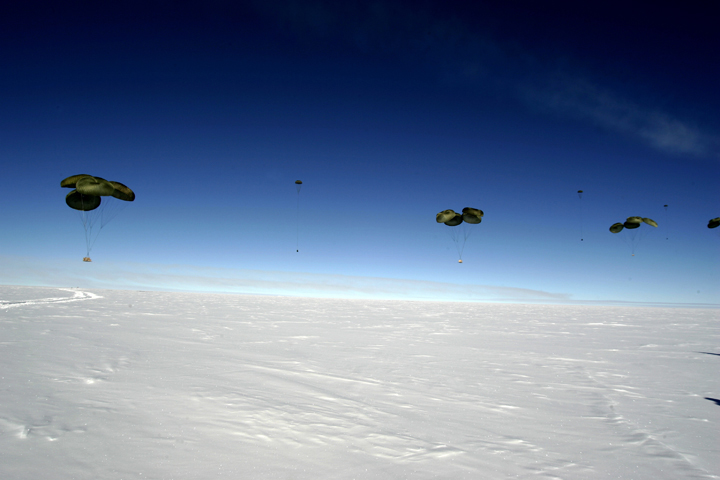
C-17 makes its first South Pole airdrop

Pallets of cargo fall to the ice Dec. 20 during the first C-17 Globemaster III airdrop to the South Pole. Airmen from the 62nd and 446th Airlift Wings at McChord Air Force Base, Wash., delivered 70 tons of supplies to the National Science Foundation team wintering there. The mission was a